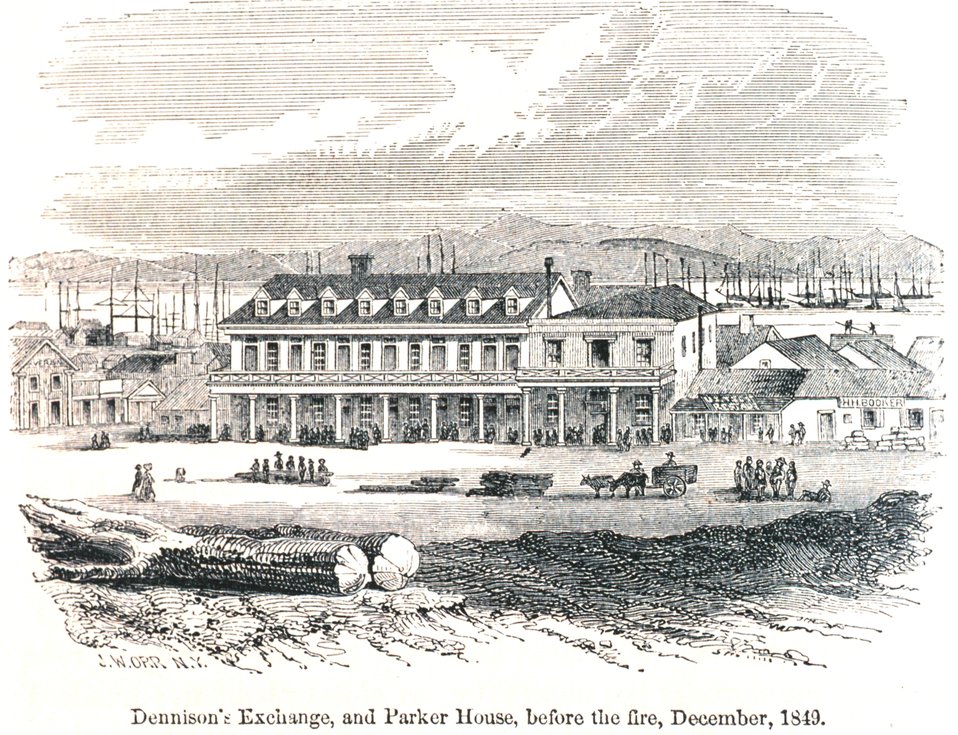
Dennison's Exchange and Parker House before the fire, December 1849. In: 'The Annals of San Francisco'. Frank Soule, John Gihon, and James Nesbit. 1855. Page 242. D. Appleton & Company, New York. F869.S3.S7 1855.